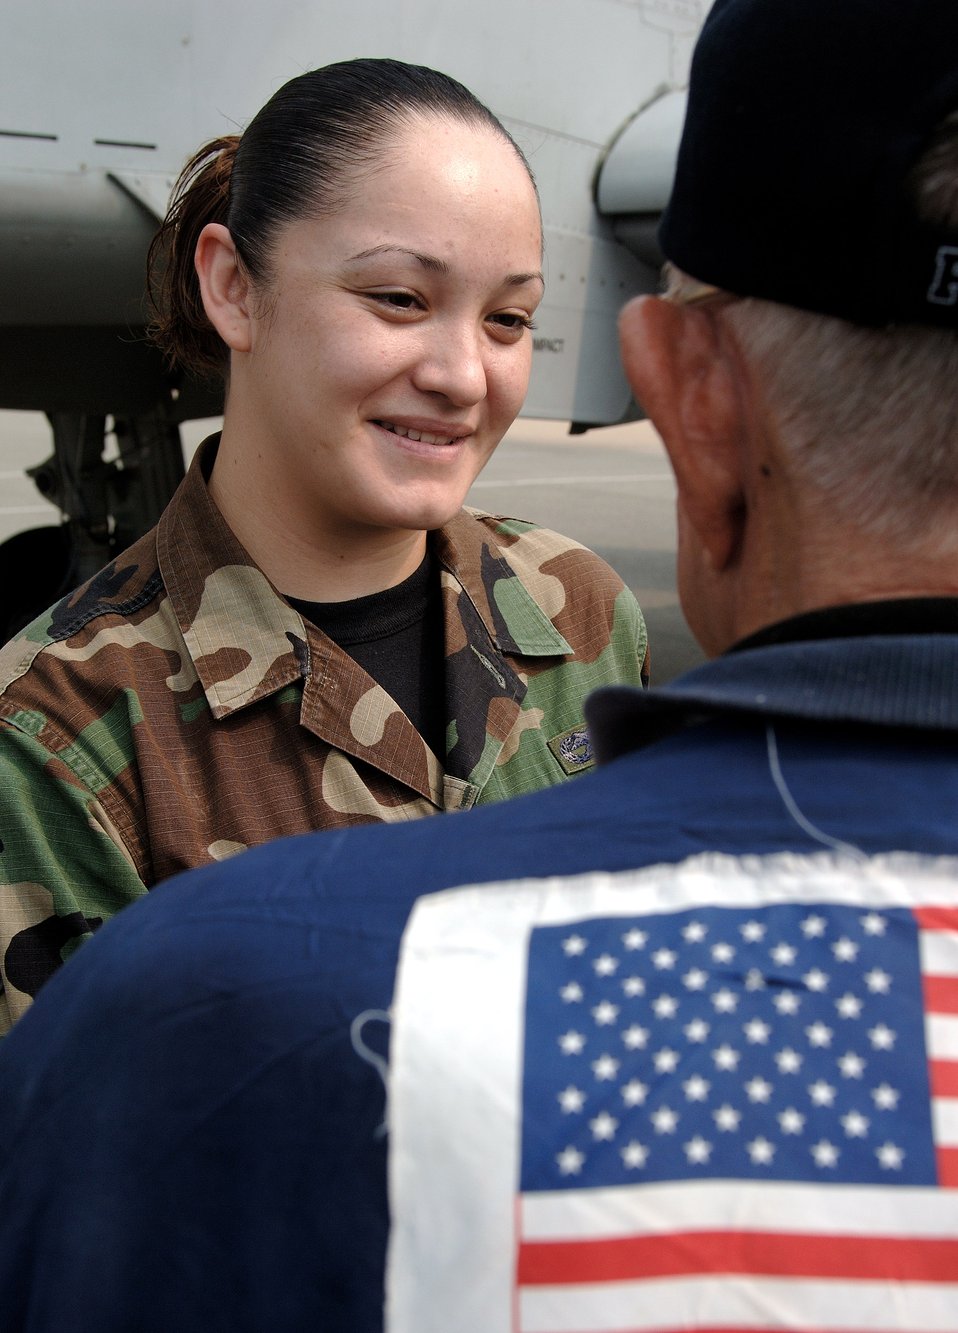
Pilots of yesteryear interact with Airmen of today

Texas native Senior Airman Stephanie Lopez talks with retired Lt. Col. Harold Fischer about living in San Antonio during a Sept. 11 tour of Osan Air Base, South Korea. Colonel Fischer and seven other Korean War veterans are visiting South Korea during a weeklong tour in observance of the Air Force's 60th Anniversary. Colonel Fischer is a Korean War double ace.